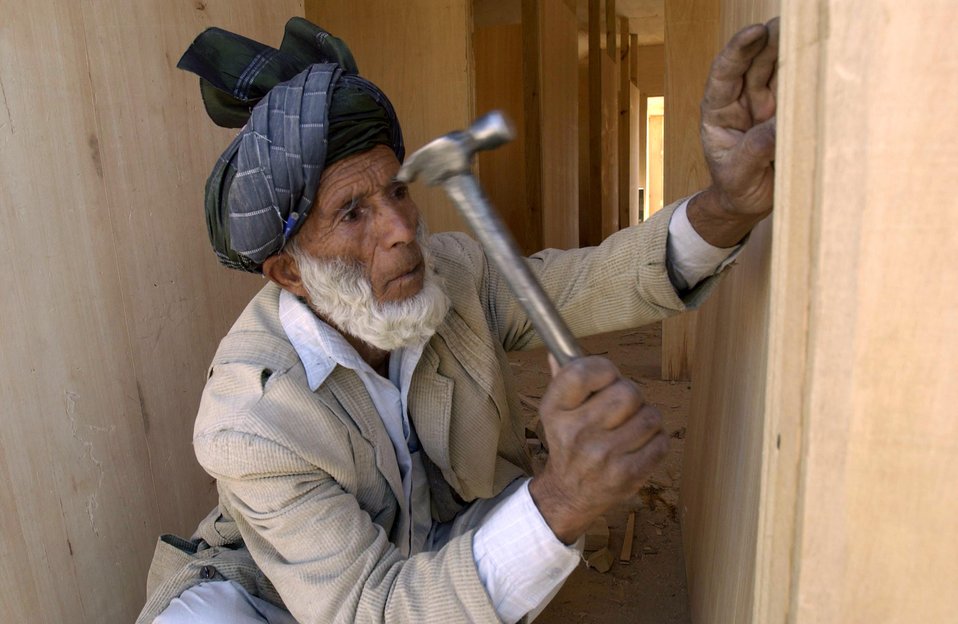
From tents to huts

BAGRAM AIR BASE, Afghanistan -- A worker here hammers a nail inside a B-hut at Air Force Village. Afghan carpenters construct these huts using only hand tools. Even sheets of plywood are cut by hand. The huts will replace the temper tents as living quarters.